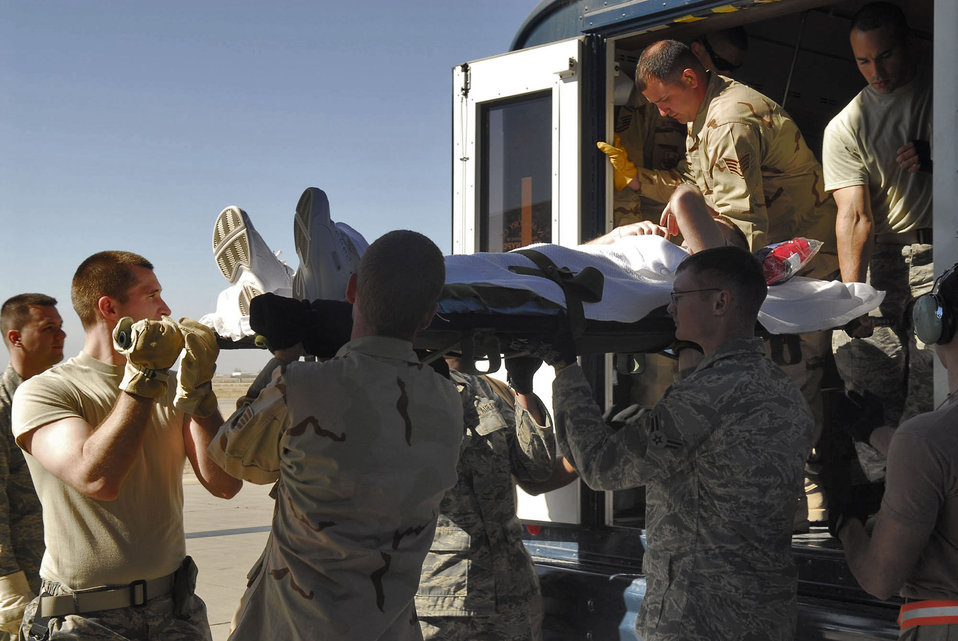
Out of harm's way

332nd Air Expeditionary Wing volunteers unload a patient from an ambulance bus and prepare to take the patient to a waiting C-17 Globemaster III at Balad Air Base, Iraq. Air Force Theater Hospital volunteers from throughout the base help the Contingency Aeromedical Staging Facility staff load and secure patients. The patient will then fly to Ramstein AB, Germany, to receive additional medical care at Landstuhl Regional Medical Center.